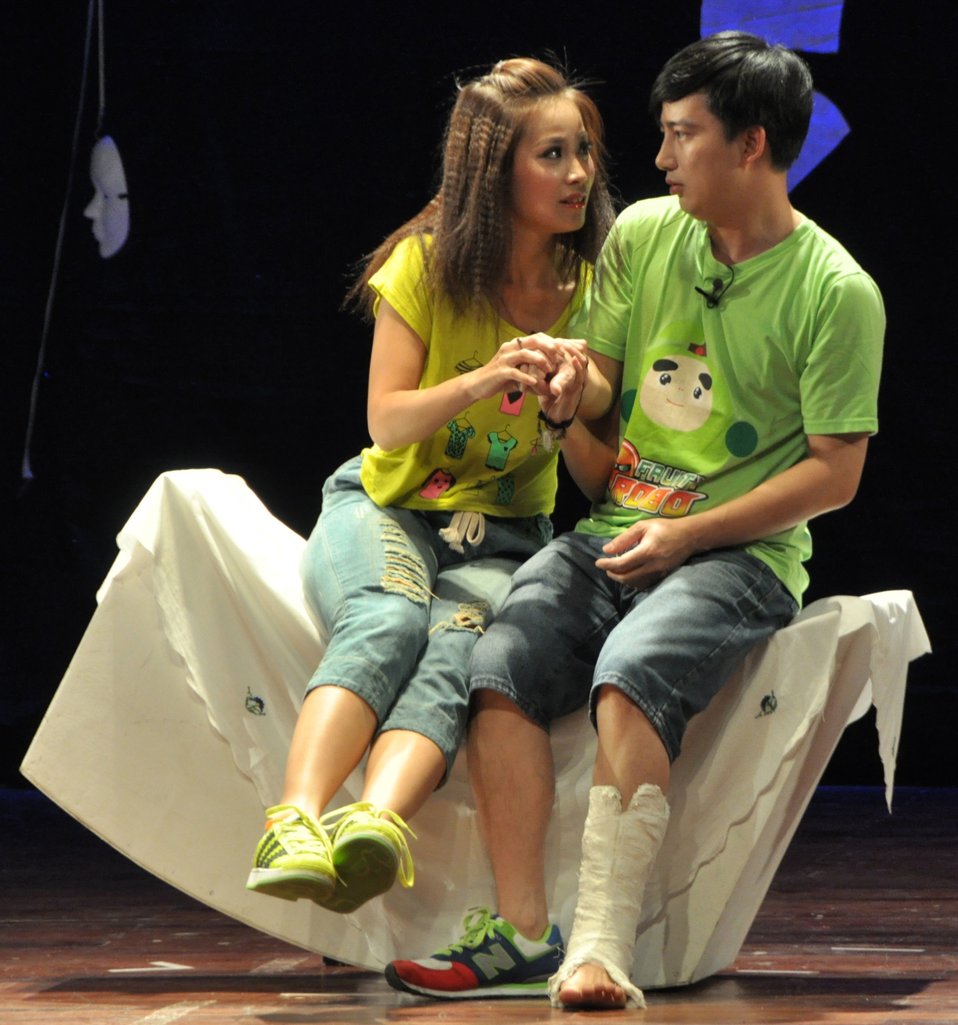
PEPFAR Musical Questions and Exclamations

Hanoi, May 17, 2013